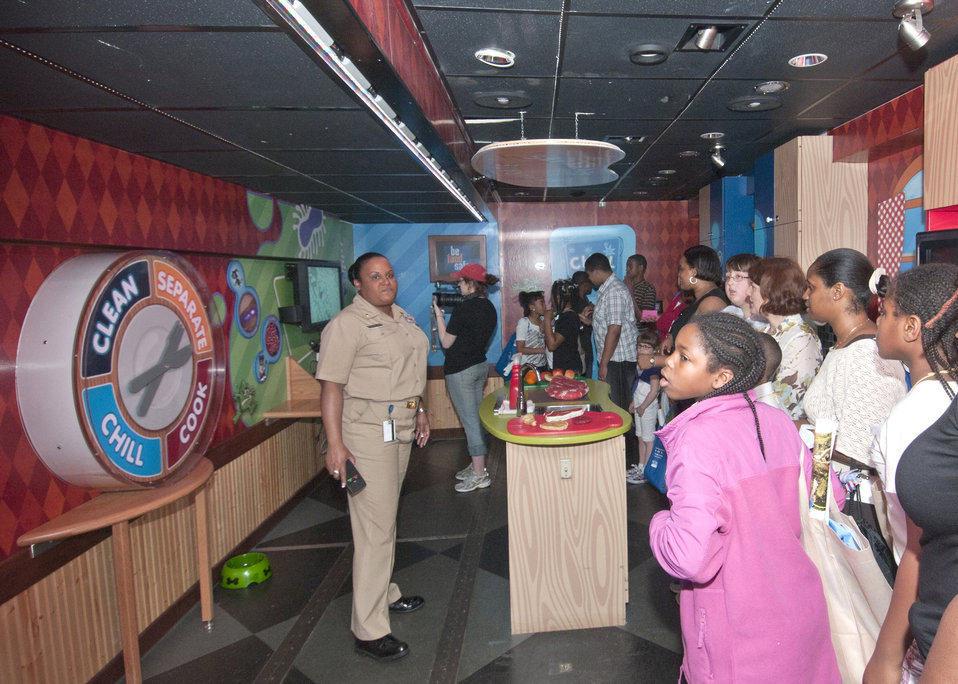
U. S. Public Health Service Lieutenant Commander Ieshia Jones instructs the young people on the safe handling of food in the Food Safety Discovery Zone mobile truck. This 40-foot truck features several hands-on, interactive activities, cool lighting and sound effects, and eye-catching educational tools to teach folks about the four easy steps that families can take to avoid food borne illness. The truck was parked in front of the U. S. Department of Agriculture (USDA) as part of USDA’s “Take Your Child to Work Day” event held in Washington, DC, on Thursday, April 28, 2011.